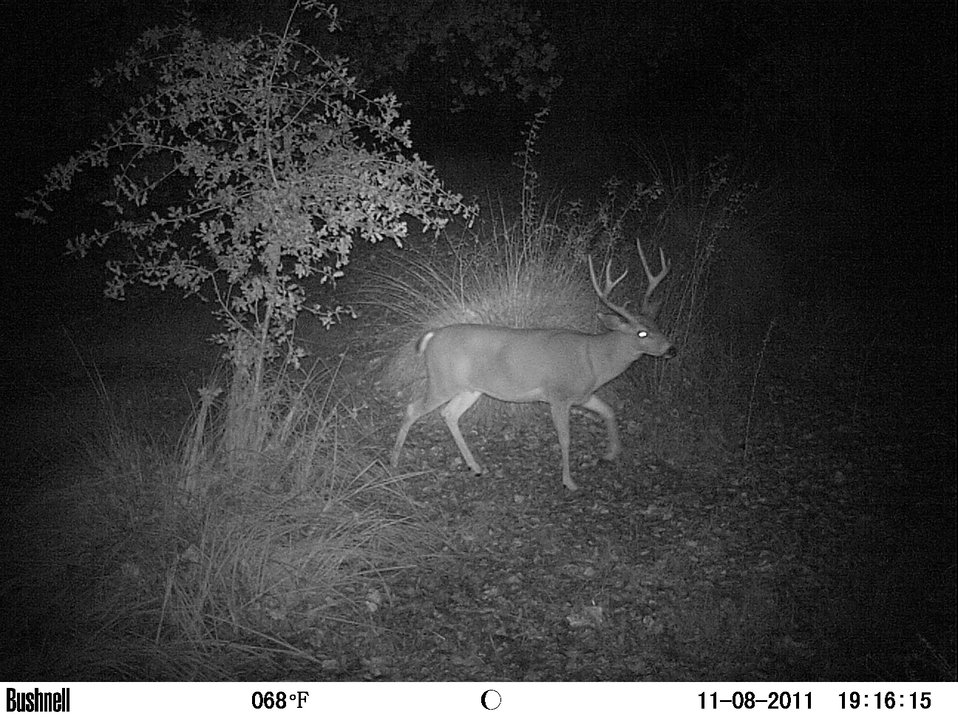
black-tailed buck by night

trail camera photo
Sacramento River National Wildlife Refuge, CA